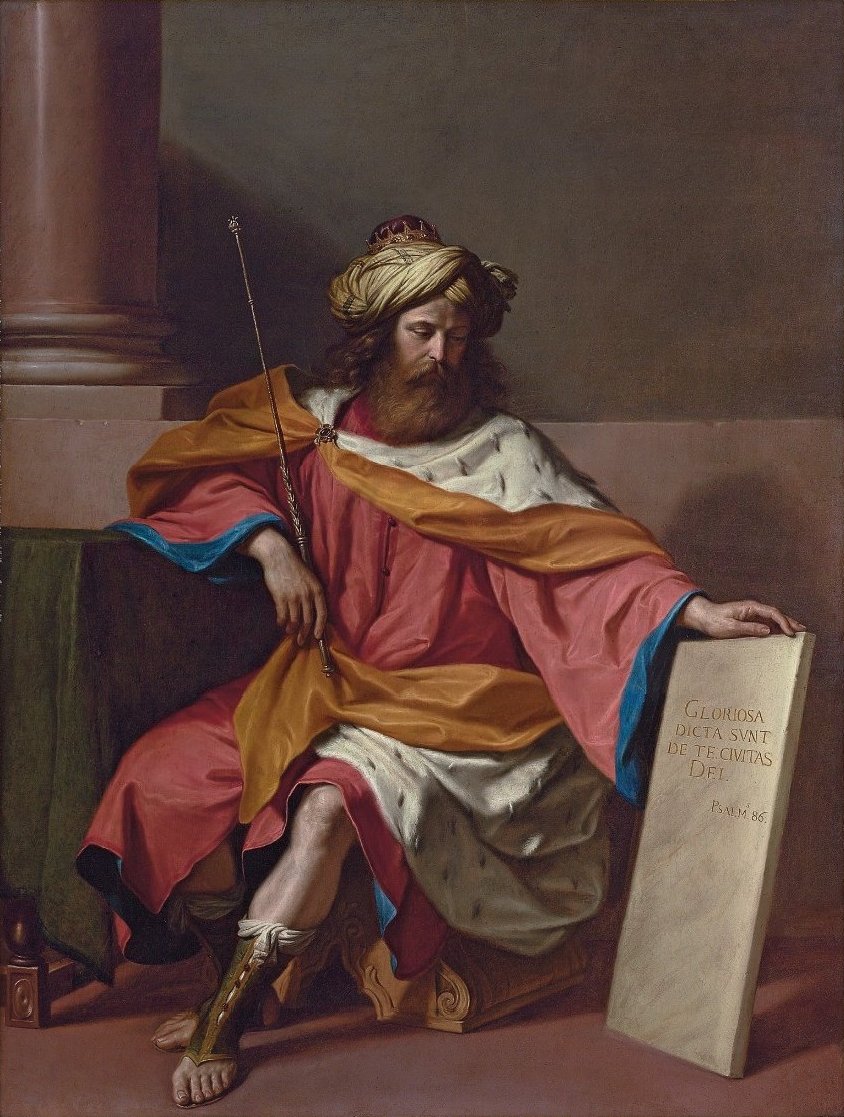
'King David', painting by Giovanni Francesco Barbieri (il Guercino) c. 1768